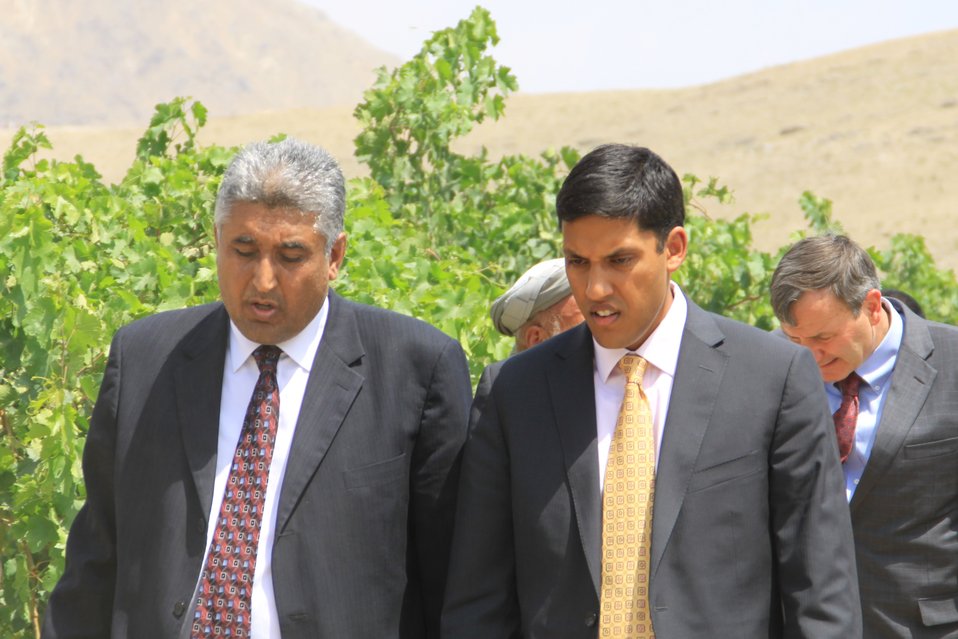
Badam Bagh Farm